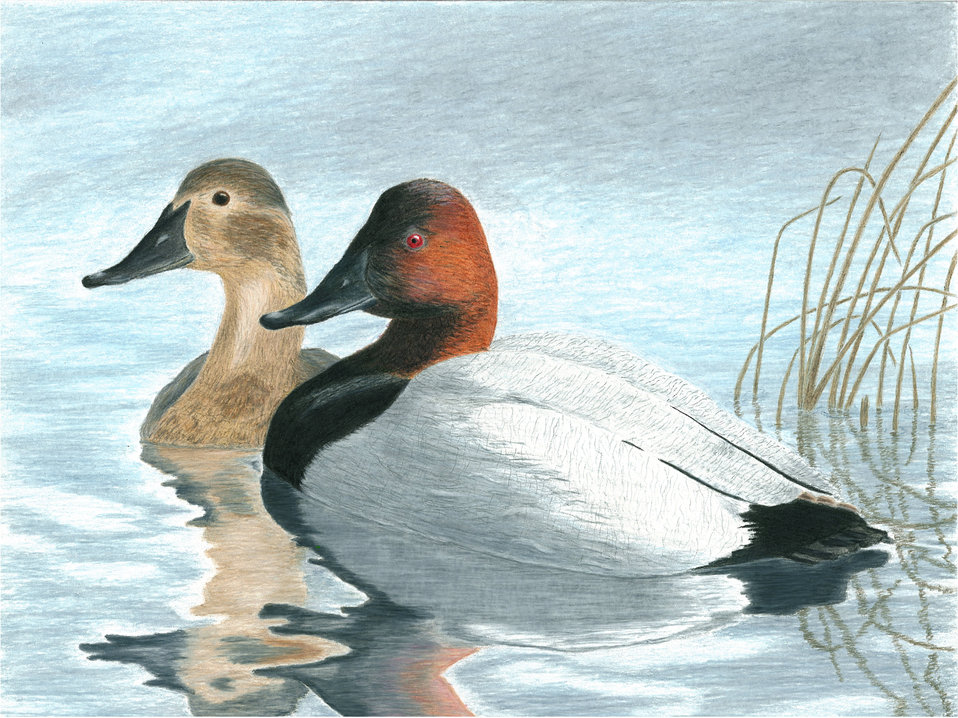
North Dakota

2012 Jr Duck Stamp Program
State Best of Show
North Dakota